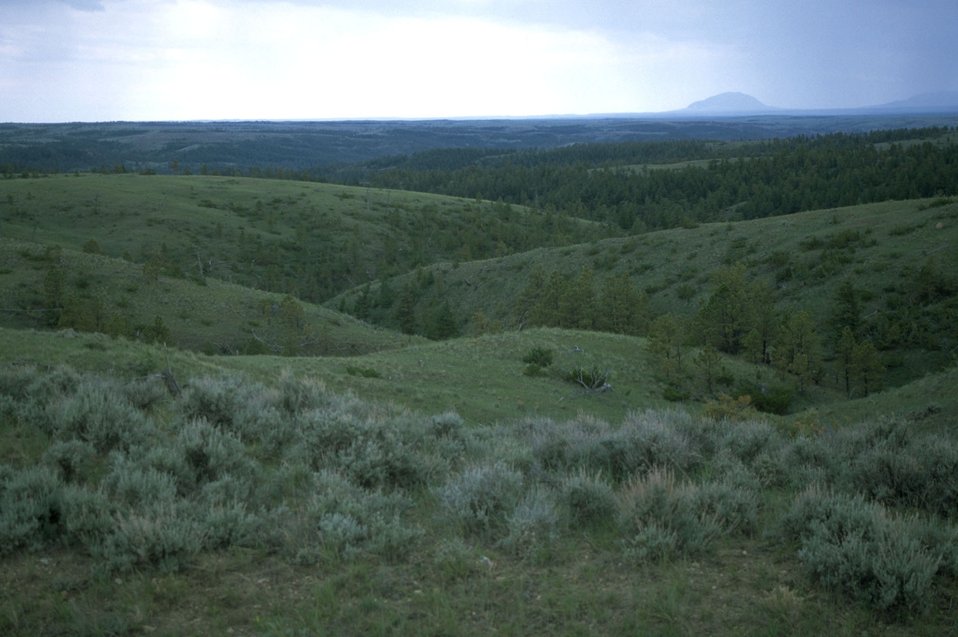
Hills and coulees with Black Butte in the background